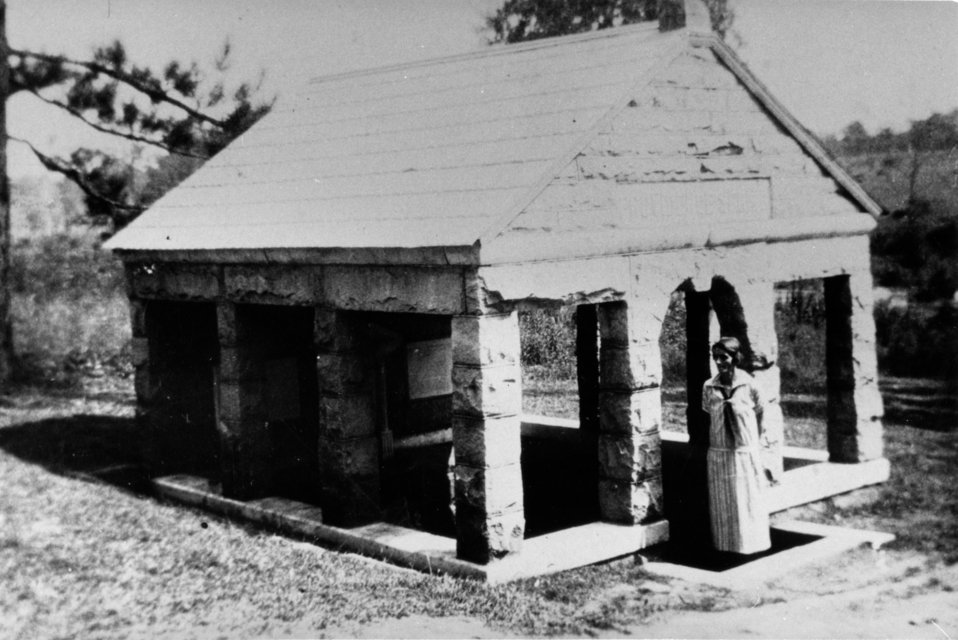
Early settlers at Oak Ridge